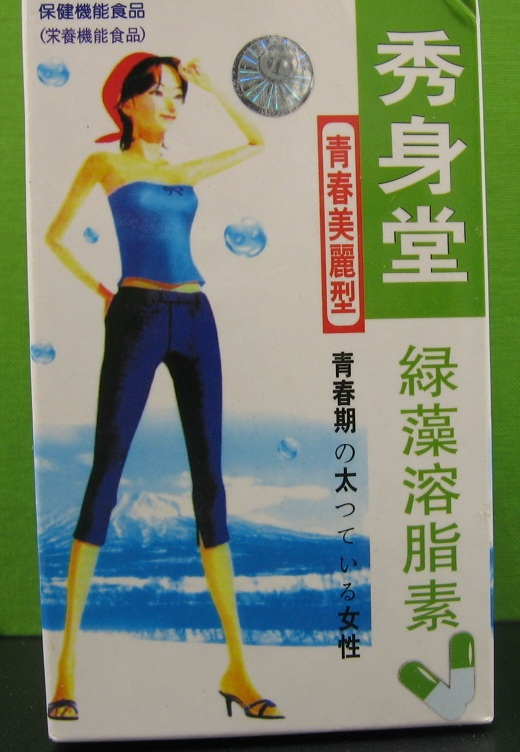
Japan Rapid Weight Loss Diet Pills Green

April 3, 2012 - The FDA is advising consumers not to purchase or use 'Japan Rapid Weight Loss Diet Pills Green ,' a product promoted and sold for weight loss. The product was found to contain undeclared phenolphthalein. For more information, go to www.fda.gov/Drugs/ResourcesForYou/Consumers/BuyingUsingMe...

And read this Consumer Update: Beware of Fraudulent ‘Dietary Supplements’